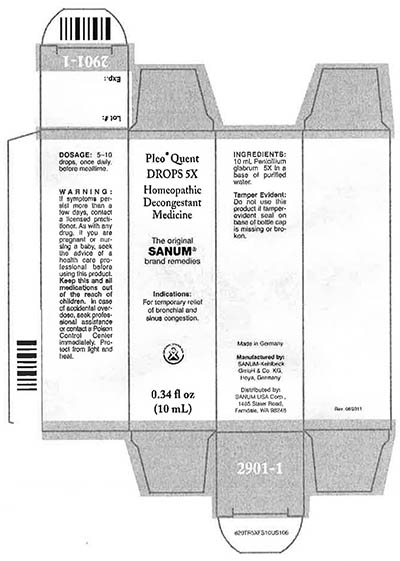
RECALLED – Homeopathic Drug Products

March 18, 2014 – Product Recall – Terra-Medica Issues Voluntary Nationwide Recall of Specified Lots of Pleo Homeopathic Drug Products Due to the Potential for Undeclared Penicillin.